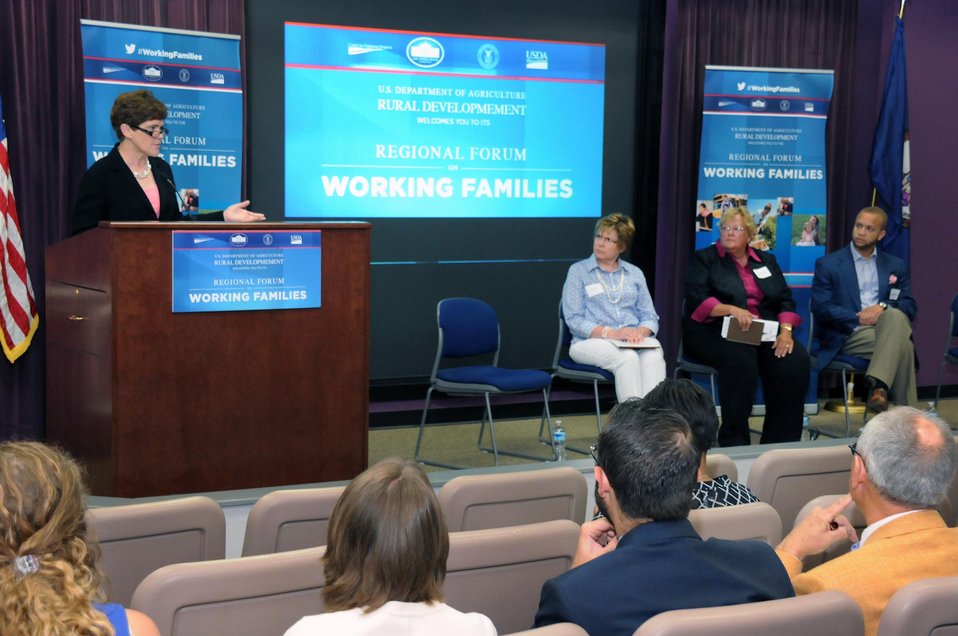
Agriculture Deputy Secretary Krysta Harden speaks at a regional forum of the White House Summit on Working Families in Petersburg, VA Wednesday, Jun. 11, 2014. The forum brings together stakeholders with government and regional leaders to identify initiatives for working families and businesses in rural areas. This forum is part of a series of regionally hosted conversations leading up to the Jun. 23, 2014 White House Summit on Working Families.